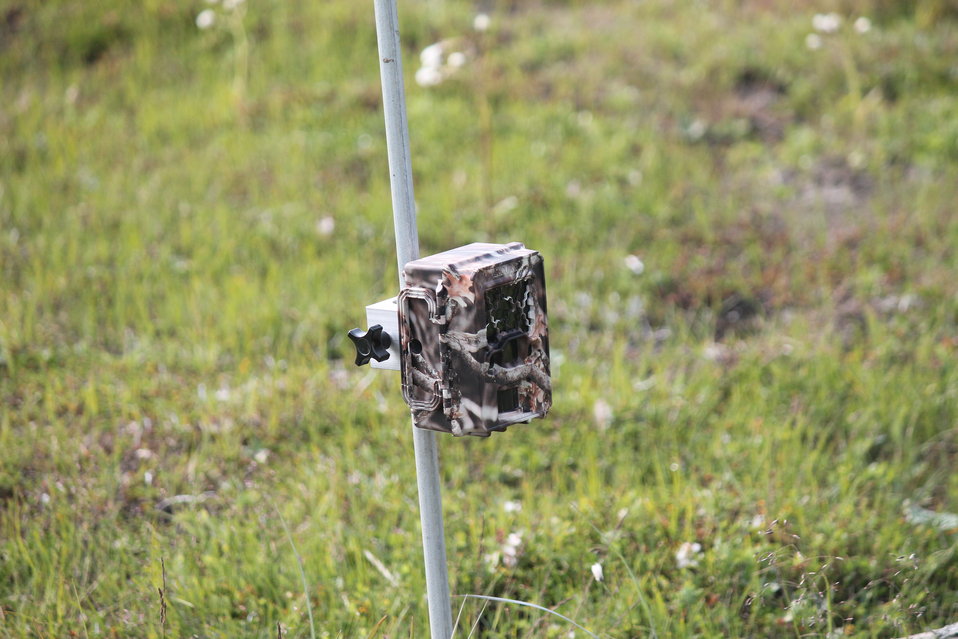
Using Trail Cameras - Say Cheese

Trail cameras are a great resource that can be used for more than just documenting activity at a tree stand. This trail camera was placed on a fox den to document fox activity and has also been used on swim-in traps to assess temporal patterns of duck use in relationship
to trap-checking schedule efficiency. Cameras were also used to identify potential trap predators and timing of presence to help minimize predation event impacts.

USFWS Yukon Delta NWR